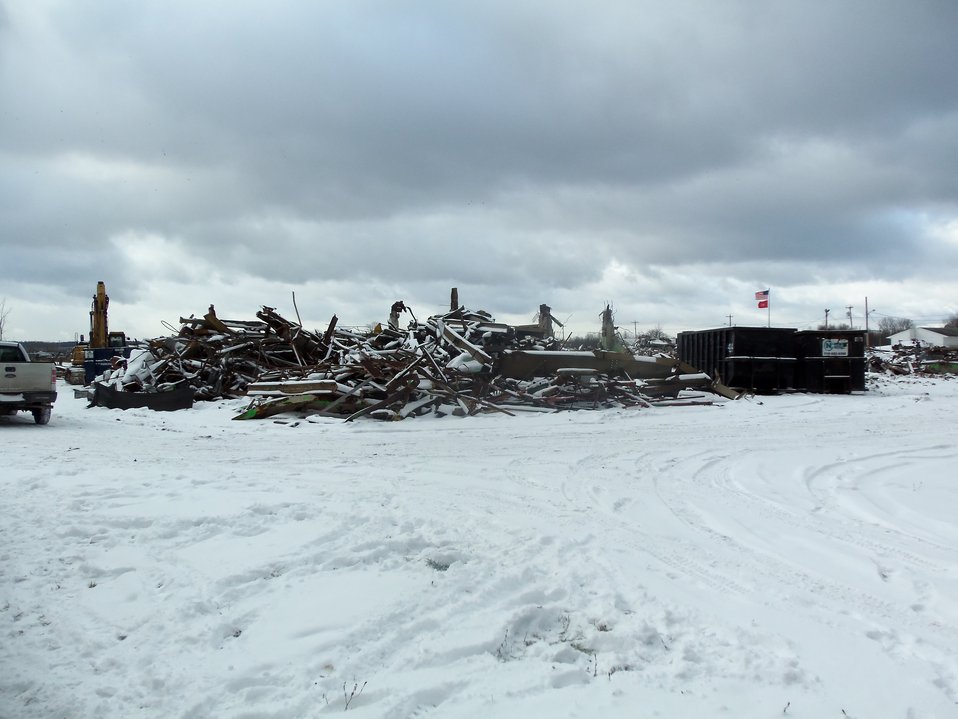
Building 401 remains of debris.

Activities from the Niagara Falls Storage Site, which is associated with the former Lake Ontario Ordnance Works. Formerly Utilized Sites Remedial Action Program (FUSRAP), a program initiated in 1974 to identify, investigate and clean up or control sites that were part of the Nation's early atomic energy and weapons program. Activities at the sites that are eligible for FUSRAP were conducted by Manhattan Engineer District (MED) or the Atomic Energy Commission (AEC), both predecessors of the Department of Energy (DOE). The U.S. Army Corps of Engineers was assigned management of FUSRAP by Congress in 1997.